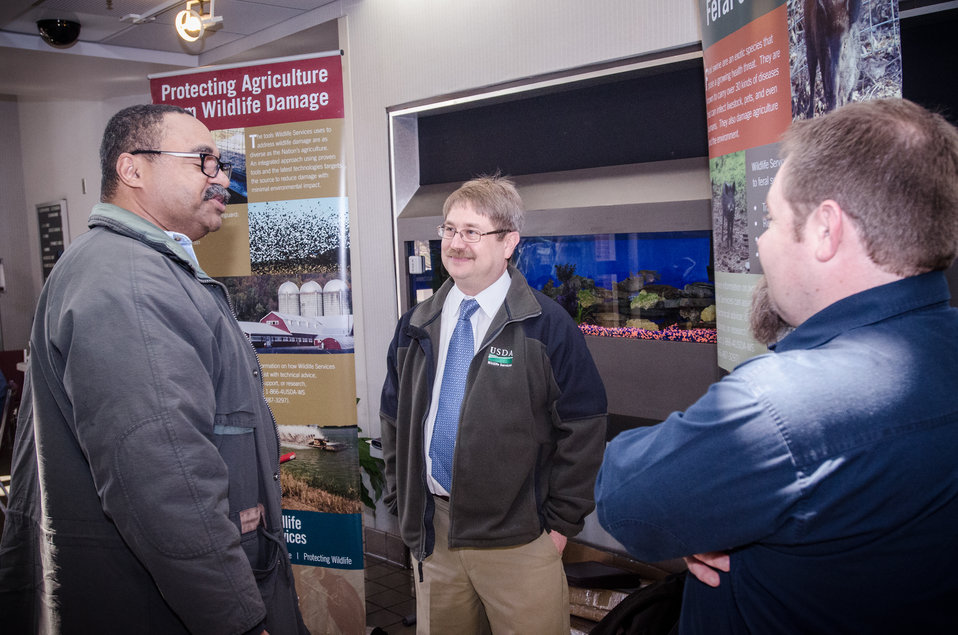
U.S. Department of Agriculture (USDA) Animal and Plant Health Inspection Service Wildlife Services State Director Scott C. Barras, Ph.D., center, and Staff Wildlife Biologist Jeffrey Rumbaugh, right, talked with farmers participating in the “Virginia State University (VSU), USDA and Virginia Farmers Working Together” outreach workshop in the VSU, L. Douglas Wilder building on Thursday, March 7, 2013, in Petersburg, VA. Farmers shared and learned new ways to do more with USDA services, and how to apply for programs that will help grow their business.